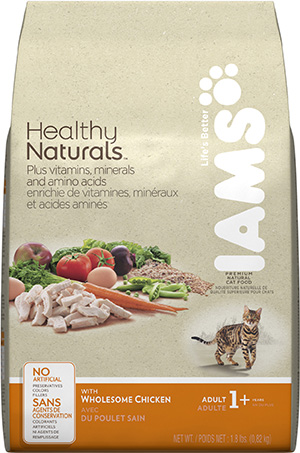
RECALLED – Dog and Cat foods - Dry

August 14, 2013 – Product Recall – P&G Voluntarily Recalls Limited Quantity of Dry Pet Food Due to Possible Health Risk.